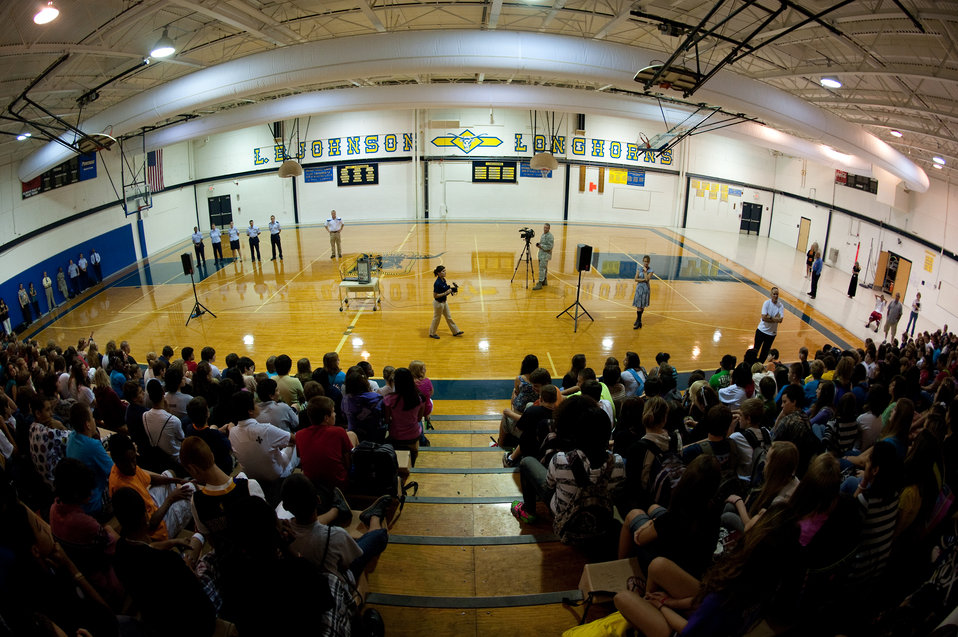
Small kestral captures school's attention

Cadet 3rd Class Danielle Cortez and